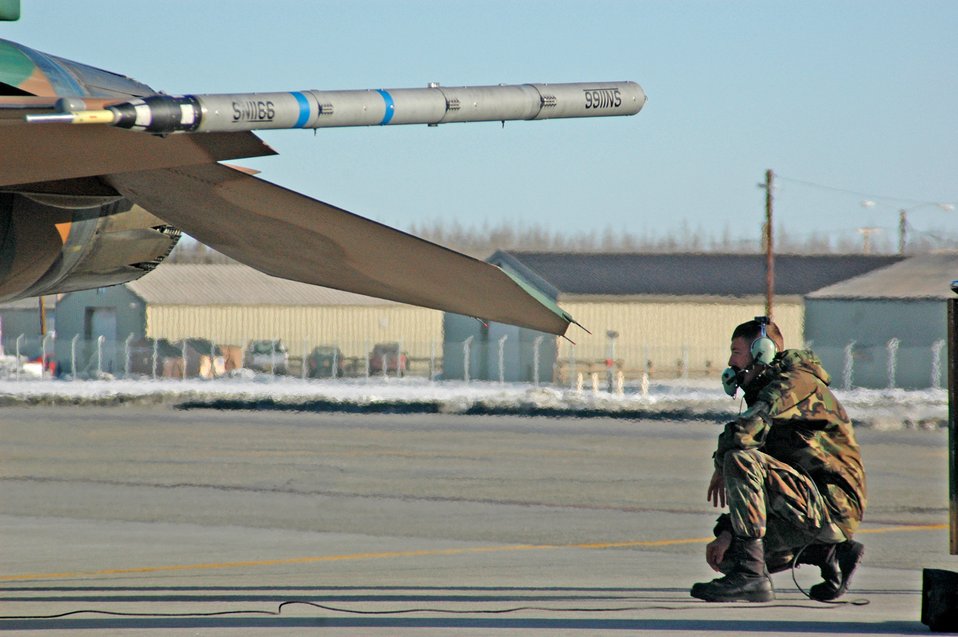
Red Flag-Alaska strengthens coalition forces

Senior Airman Brian Brammer completes last-minute checks on an F-16 Fighting Falcon prior to a Red Flag-Alaska 07-1 orientation flight April 6 at Eielson Air Force Base, Alaska. Red Flag-Alaska enables aircrews to sharpen their combat skills by flying 10 simulated combat sorties in a realistic threat environment. Airman Brammer is a crew chief with the 57th Aircraft Maintenance Squadron.